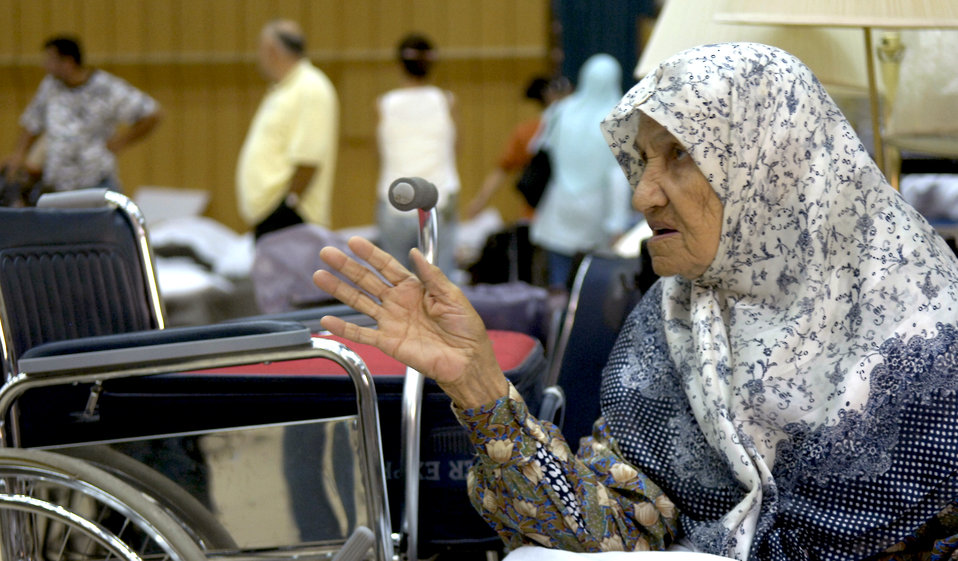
Ramstein medical teams provide humanitarian care

An American from Lebanon awaits transportation in Cyprus on Tuesday as part of the U.S. State Department's assisted departure of citizens fleeing that country. Many Americans en route to the United States are relying on care provided by medical people from Ramstein Air Base, Germany. Nine medical teams from Ramstein's 425th Medical Group are deployed to Cyprus to provide 24-hour care at five different locations and help more than 200 patients a day.